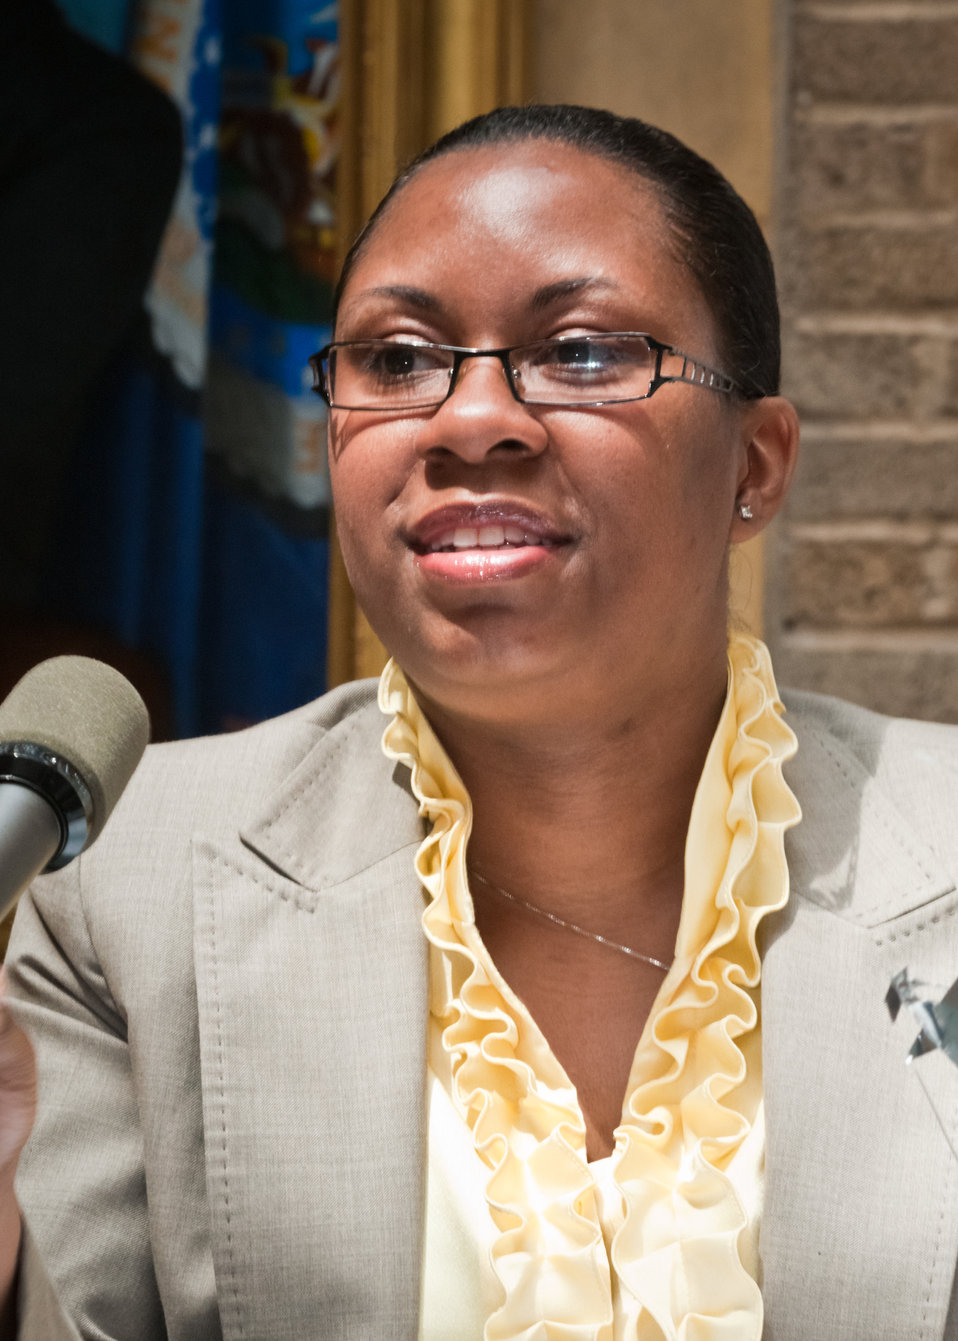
Connie Doyle, Senior Consultant, trainer and executive coach with CI International listens to employee questions during a “Telework Program Party/Brown Bag” event on the patio of the Jamie Whitten Building of United States Department of Agriculture, in Washington, DC, on Tuesday, June 7, 2011. The event included an interactive telework panel and exhibits from the field of telework, telecommuting and mobile work environments. The event was open to all USDA employees, supervisors, managers, human resources staff and USDA telework program coordinators.